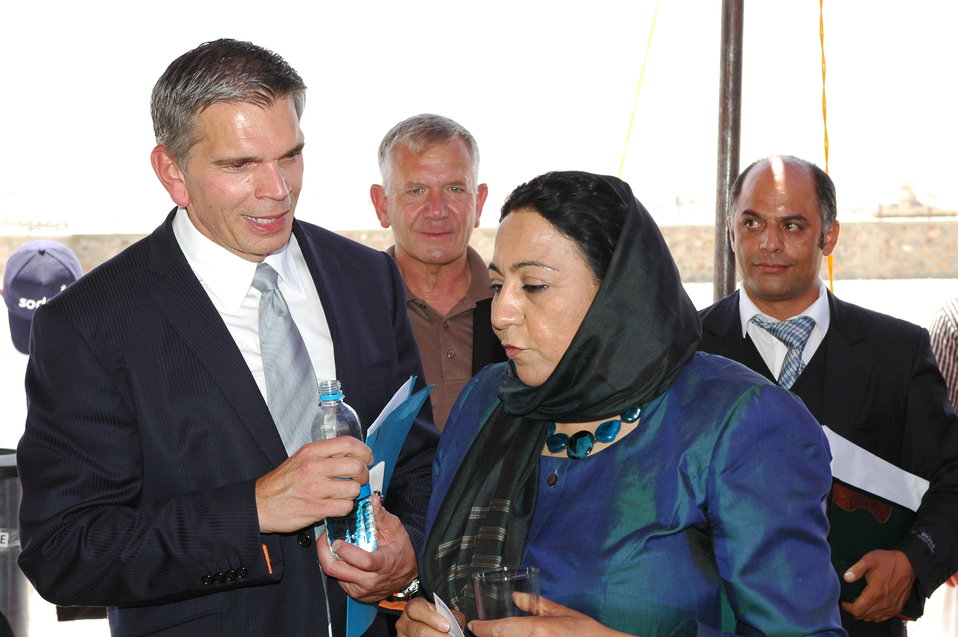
105 MW Tarakhil Power Plant Handover